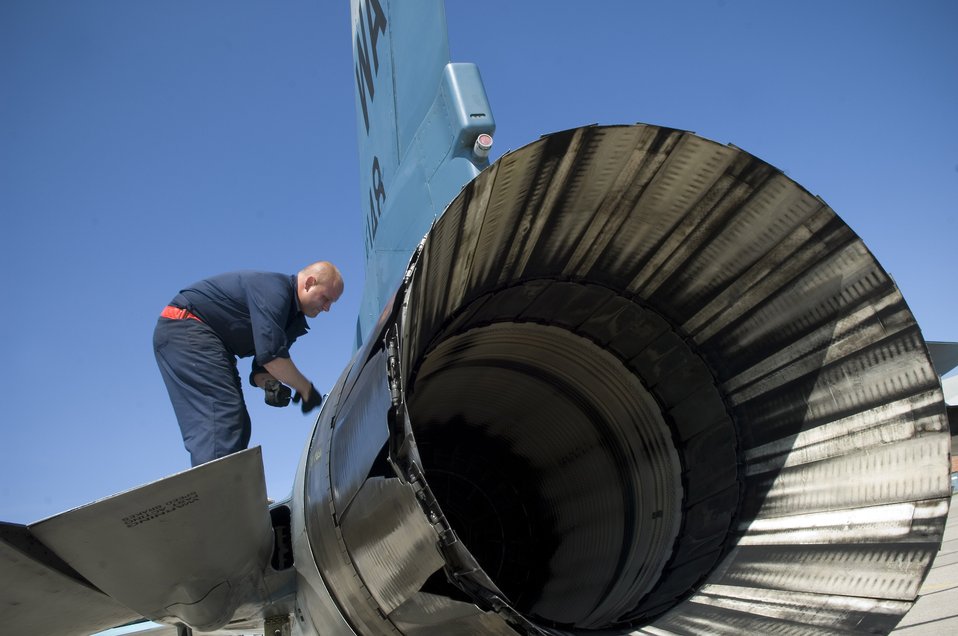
Aggressors give Blue Forces realistic training

Staff Sgt. John Linfoot performs a post flight inspection on a F-16 Fighting Falcon during Maple Flag 41 at Cold Lake, Canada. Sergeant Linfoot is crew chief from the 64th Aggressor Squadron, Nellis Air Force Base, Nev. Maple Flag is a four-week international air combat exercise held annually at 4 Wing Cold Lake, Alberta. The exercise provides Canadian and allied aircrews with realistic training in a modern simulated air combat environment, and it emphasizes air operations, involving large package coalition forces. Sergeant Linfoot is an F-16 jet crew chief.